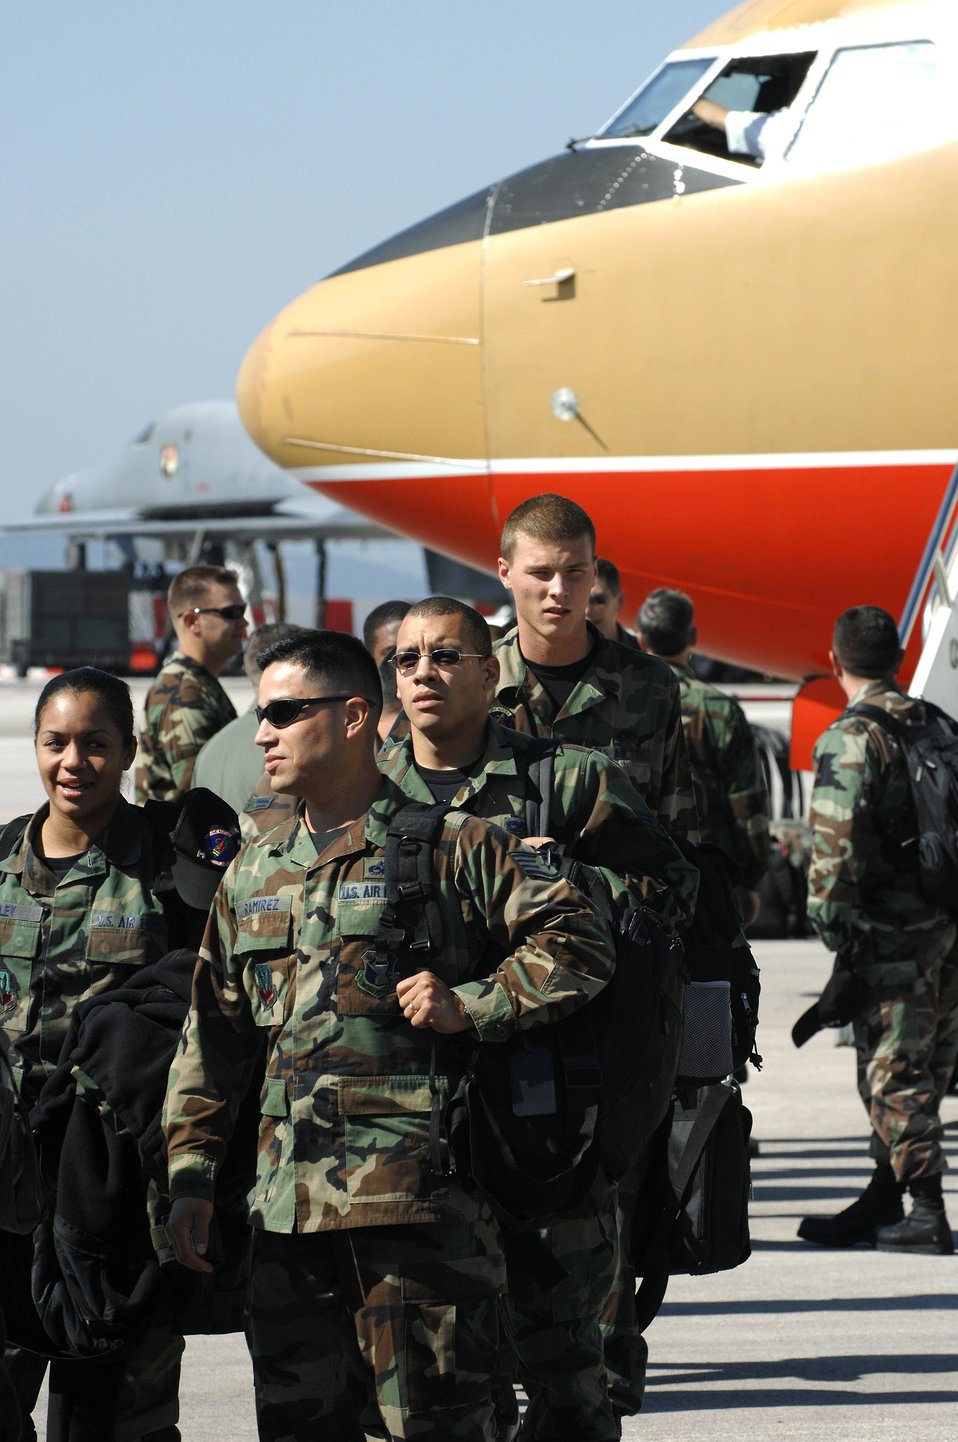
Dyess Airmen, aircraft arrive at Ellsworth

Airmen from the 7th Bomb Wing at Dyess Air Force Base, Texas, exit an aircraft on the flightline Sept. 20 at Ellsworth AFB, S.D. Ellsworth AFB will temporarily house 550 Airmen and 20 B-1 aircraft from Dyess AFB while 6,600 feet of runway are under repair there.